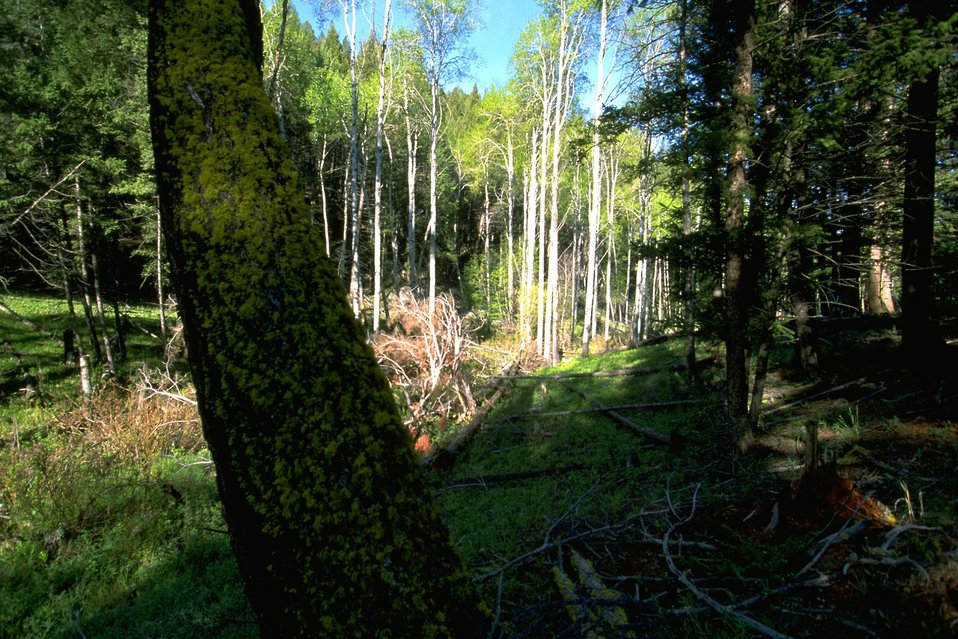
Tree trunk with moss in a grove of Aspen trees